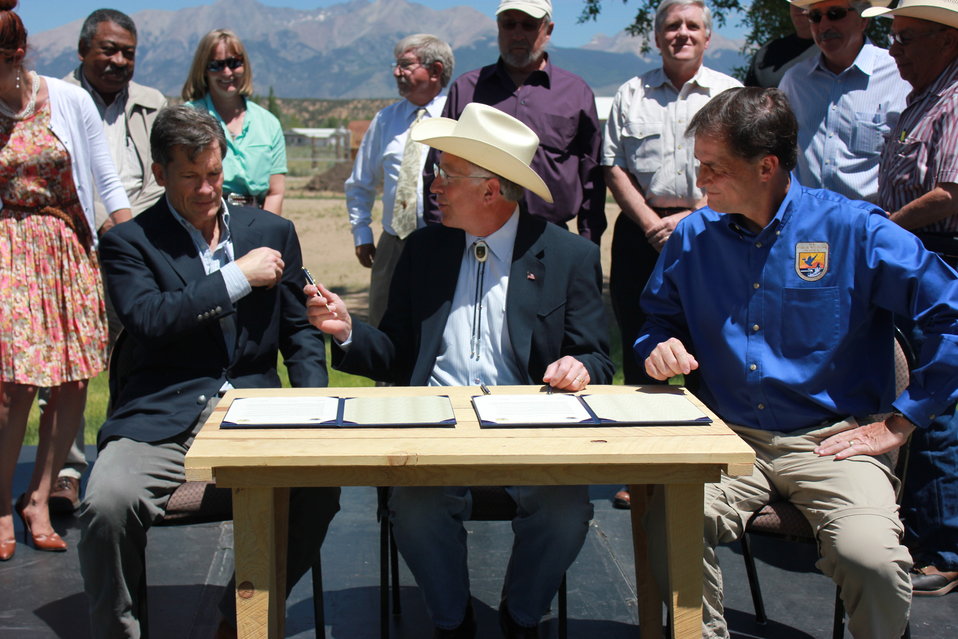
Historic Conservation Easement in Sangre de Cristo Mountains